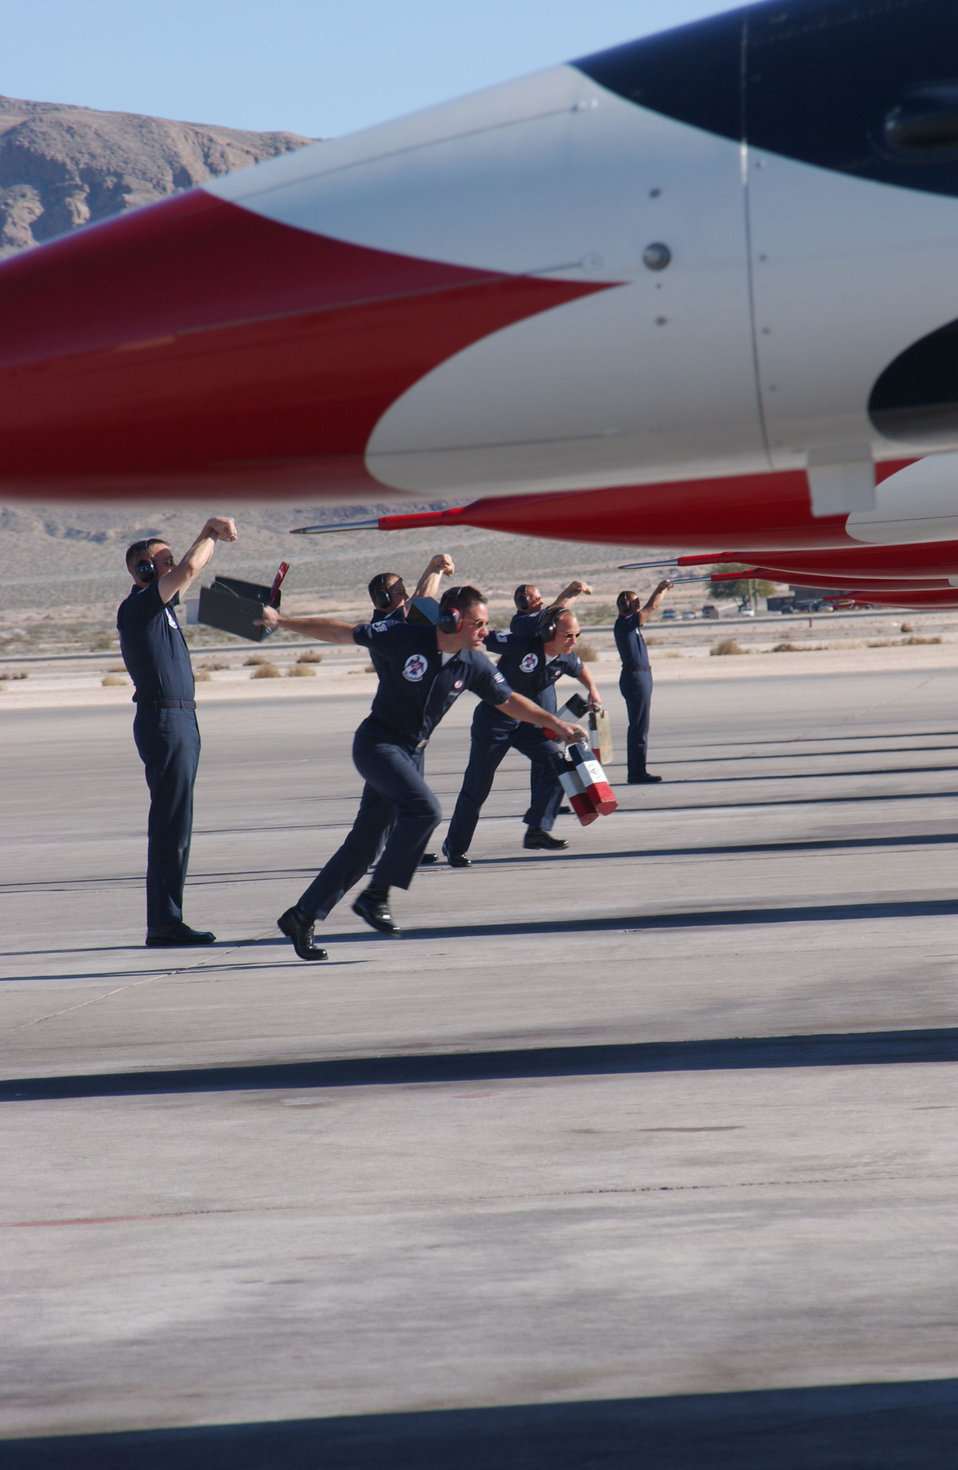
Show Line

NELLIS AIR FORCE BASE, Nev. -- The 2005 Thunderbird Show Line bursts into action while recovering six jets moments after the Delta formation was formed for the first time by the 2005 demonstration team. The Delta formation is the most prestigious milestone the demonstration pilots reach during the training season. The United States Air Force Aerial Demonstration Squadron